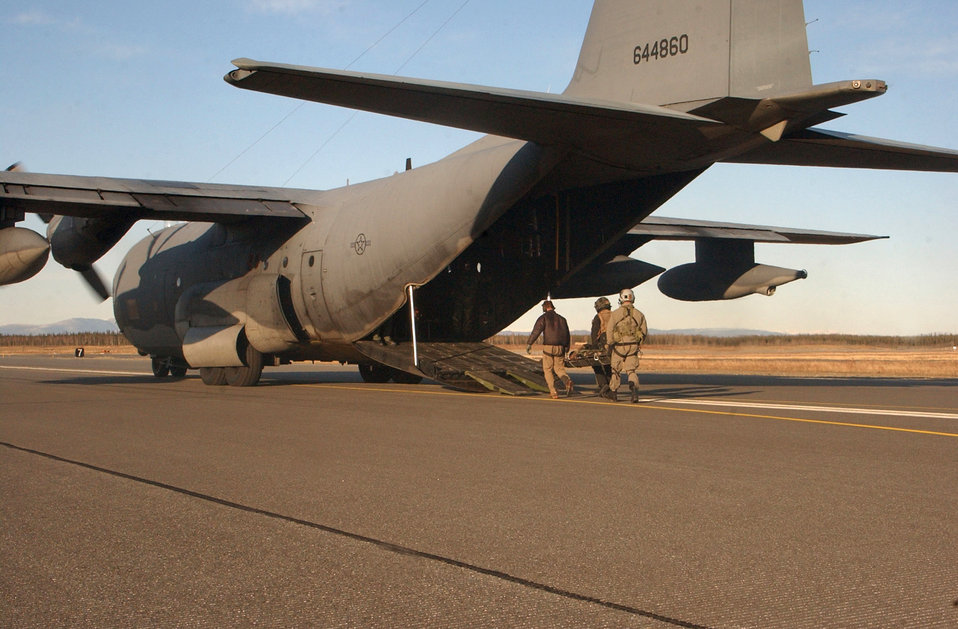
Alaska range, airspace critical to combat training

An aerial gunner and two pararescuemen off-load a simulated, injured aircrew member from a HH-60 Pave Hawk onto a HC-130 Hercules during a combat search and rescue training mission April 17 at Eielson Air Force Base, Alaska. Airmen from the 79th Rescue Squadron at Davis-Monthan Air Force Base, Ariz., are operating the HC-130 during a combat search and rescue mission at Red Flag-Alaska 07-1.